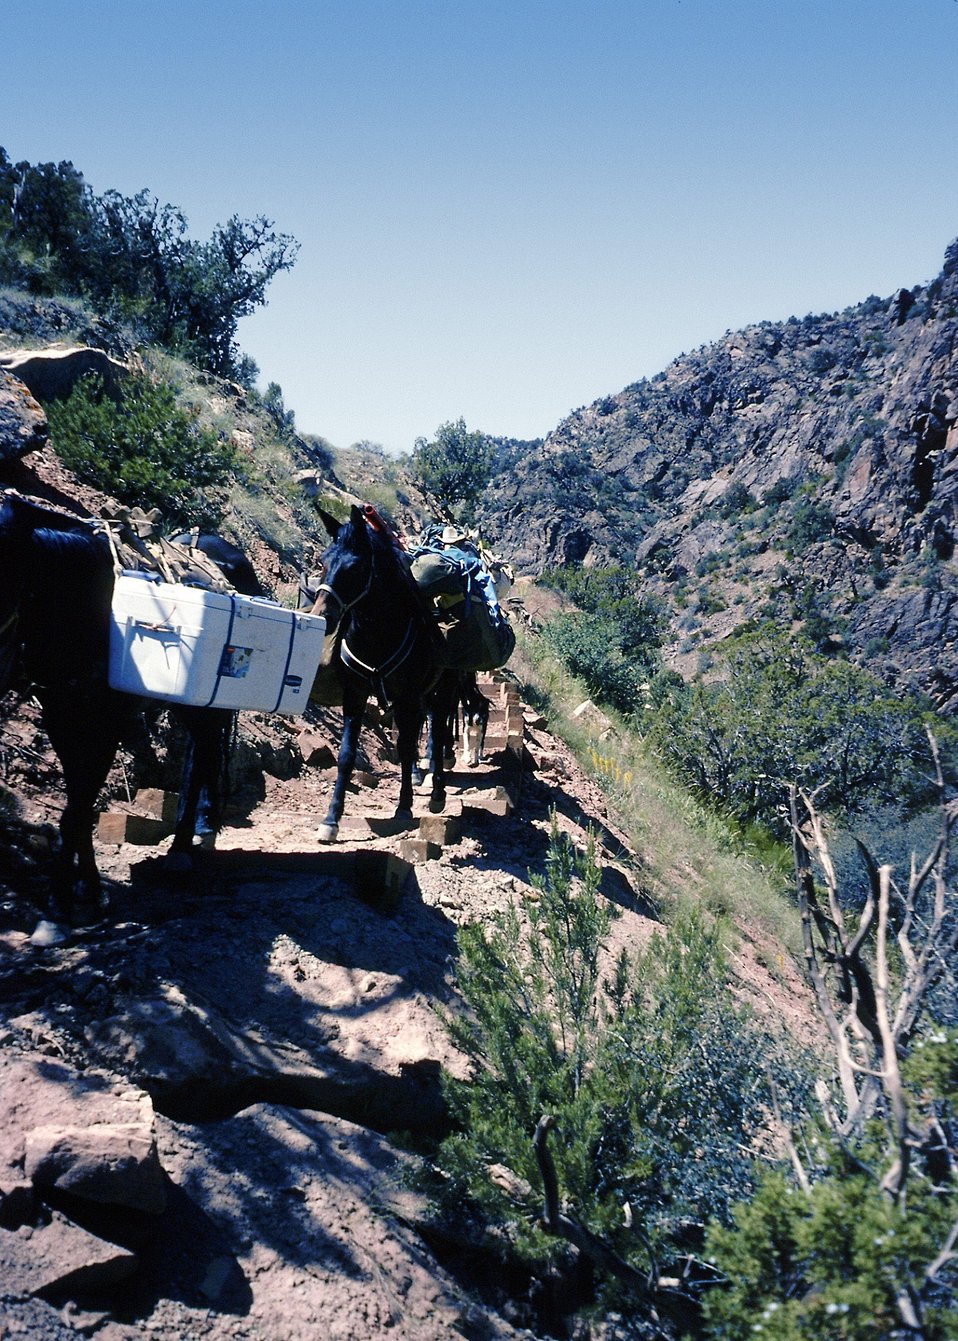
Horse Packing